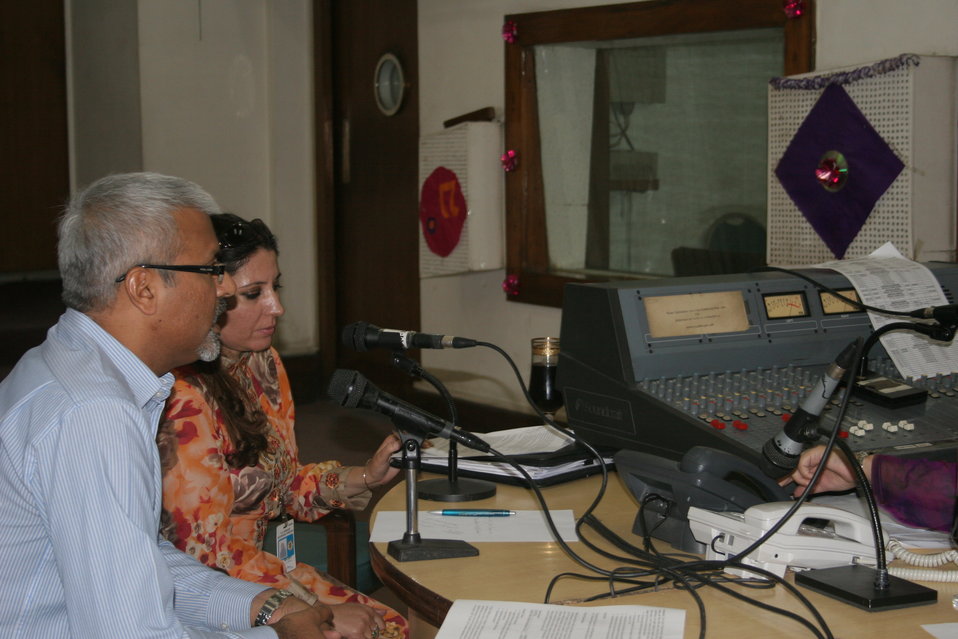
2011 May - Since January 2011, USAID’s Development Outreach and Communications Office has been running a 30-minute live Radio talk show in Urdu, “Aap Hum Aur Behtar Zindagi”, (Together, for better future – from the American people) on Thursdays about USAID-funded projects. Aap Hum Aur Behtar Zindagi is broadcast in Urdu on FM 101 through nine stations with the aim to create awareness amongst Pakistani audiences about USG development assistance program in the country. FM 101 is part of the Pakistani Broadcasting Corporation Network, with estimated 70% coverage of the country. Each show features project experts alongside USAID technical and programming staff discussing topics that have included issues as diverse as higher education, earthquake reconstruction and mango production. During this show, the participants answer questions live via phone and SMS from listeners across the country and answer questions directly. Today’s show, on USAID’s initiative to enhance the competitiveness of the mango sector by identifying and removing constraints to investments, sales and job creation through its FIRMS Project, featured Kanwal Bokharey, Economic Growth Advisor with USAID/Pakistan's Economic Growth Office and Farrukh Mehboob Khan, of the FIRMS Project. They spoke in detail about the program objectives and answered live questions. The program witnessed the most live calls and SMS ever received in this series. Callers asked about what would be the economic impact on country’s GDP with this export; whether USAID is running this program in concurrence of GoP and how USAID is offering value chain production to the mango industry.